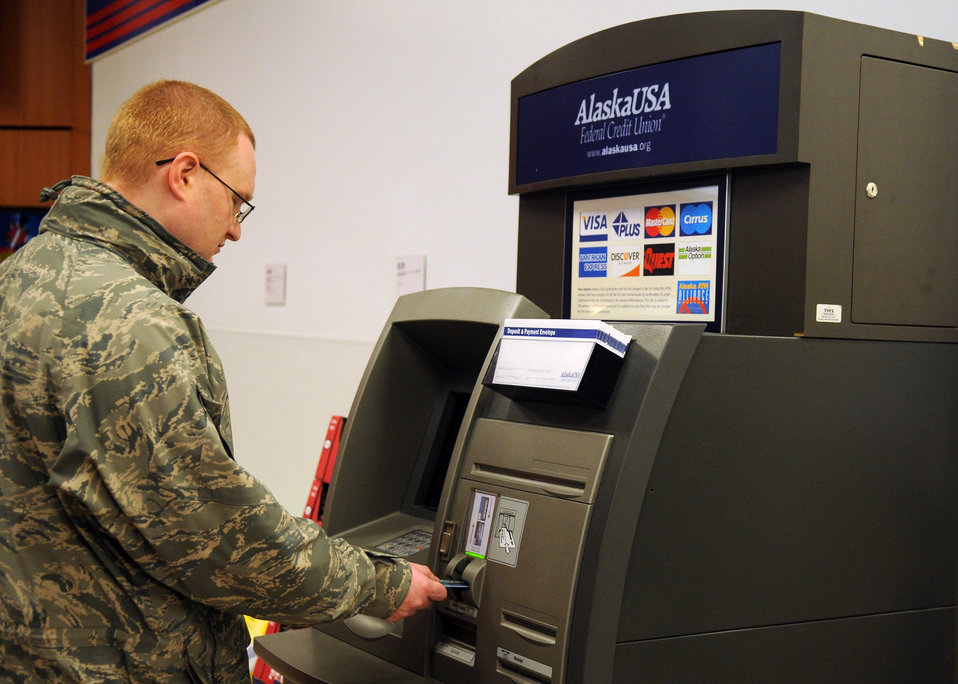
Scammers prey on servicemembers

Staff Sgt. Christopher Tracy inserts a bank card into an ATM Oct. 26, 2010, at Eielson Air Force Base, Alaska. Scams include any trick used to gain information, money or resources by preying on a person. Sergeant Tracy is a 354th Communications Squadron network control center base equipment and custodian officer.